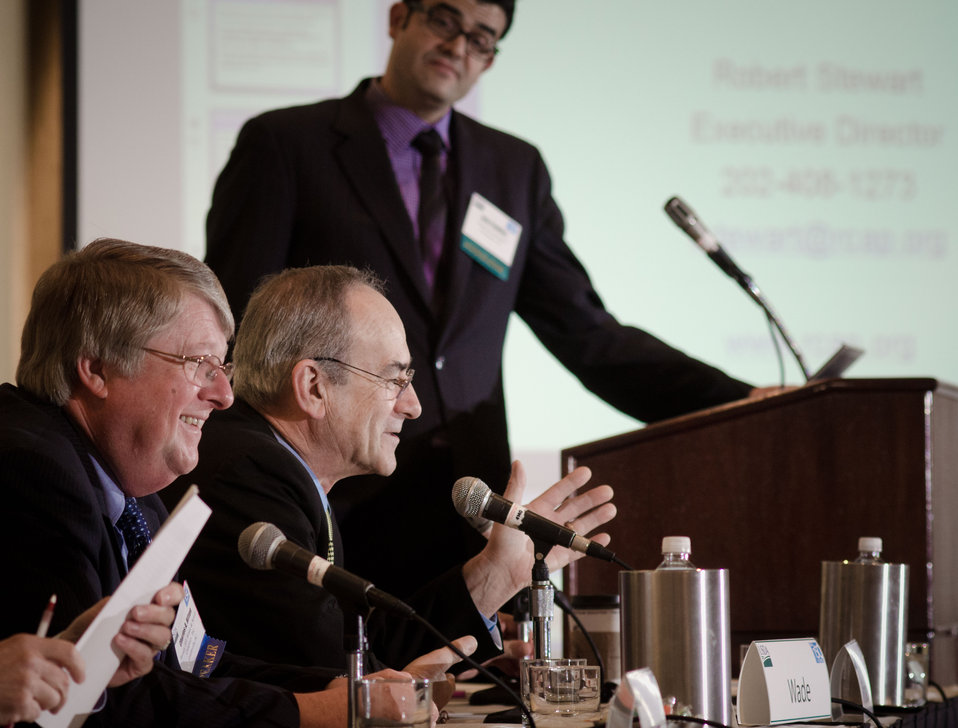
National Rural Water Association Deputy CEO Sam Wade (center) responds to a question, during the Rural Development session on “Why Every American Should Care About the Future of Rural Water,” at the 2012 Agricultural Outlook Forum, “Moving Agriculture Forward, Growing, Innovating and Celebrating 150 Years” held at the Crystal Gateway Marriott Hotel, Arlington, Virginia, on Friday, February 24, 2012. This year’s forum coincides with the 150th anniversary of the Department of Agriculture addressing economics, marketing, research, food safety, nutrition, conservation, rural development, alternative energy, trade and many other agricultural issues.